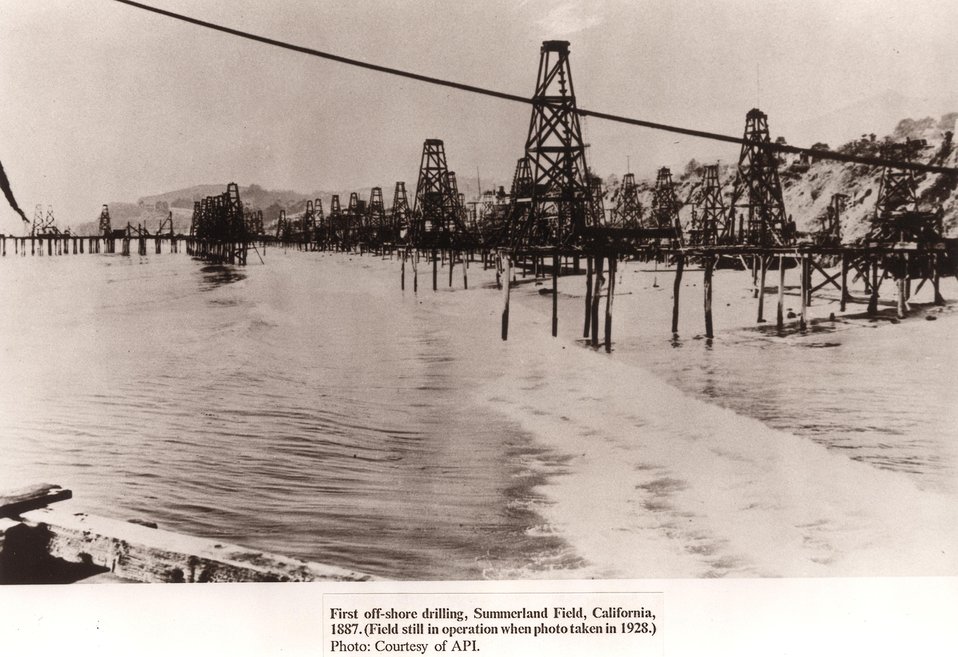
First, off-shore drilling, Summerland Field, CA, 1887.